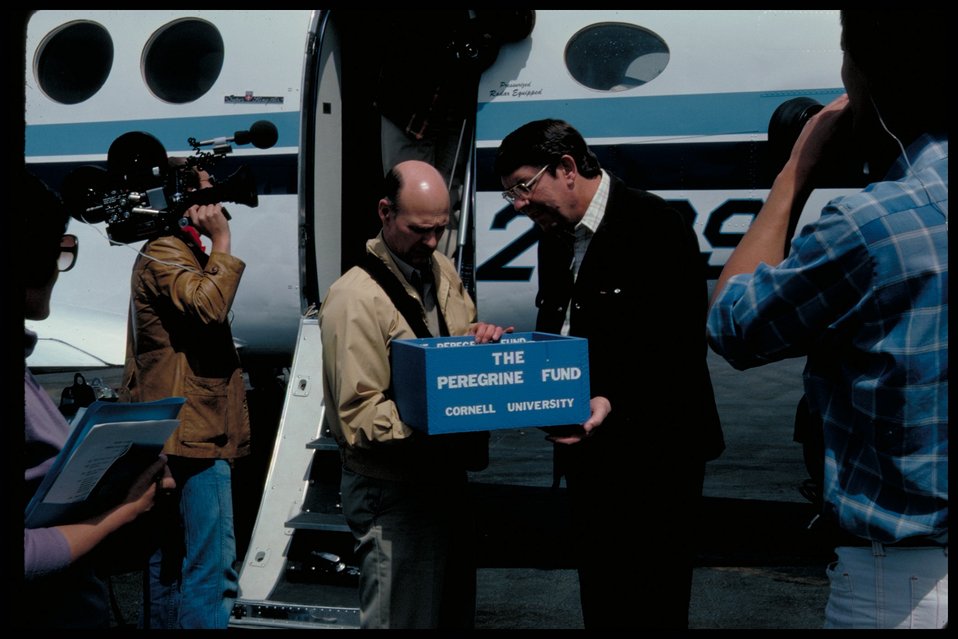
The Peregrine Fund Birds of Prey BOP Owyhee Field Office LSRD Lower Snake River District